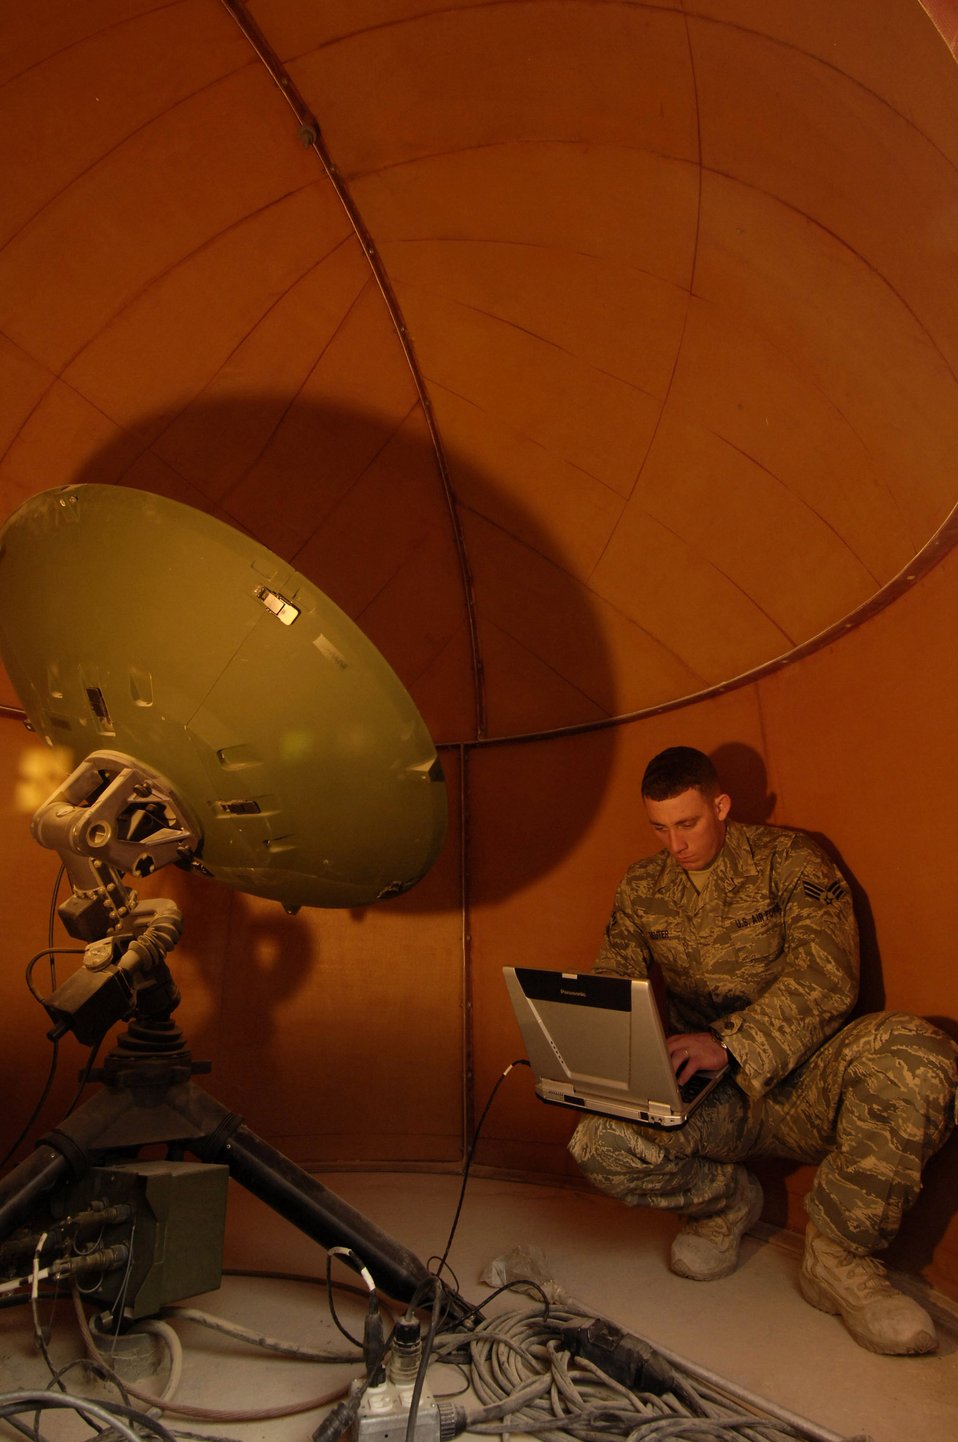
Working in Cyberspace

Senior Airman Sean Reuter, a network systems technician at an air base in Southwest Asia, taps into the Global Broadcast System, a worldwide, high capacity, transmission means for a variety of data, imagery, and other information required to support joint forces.